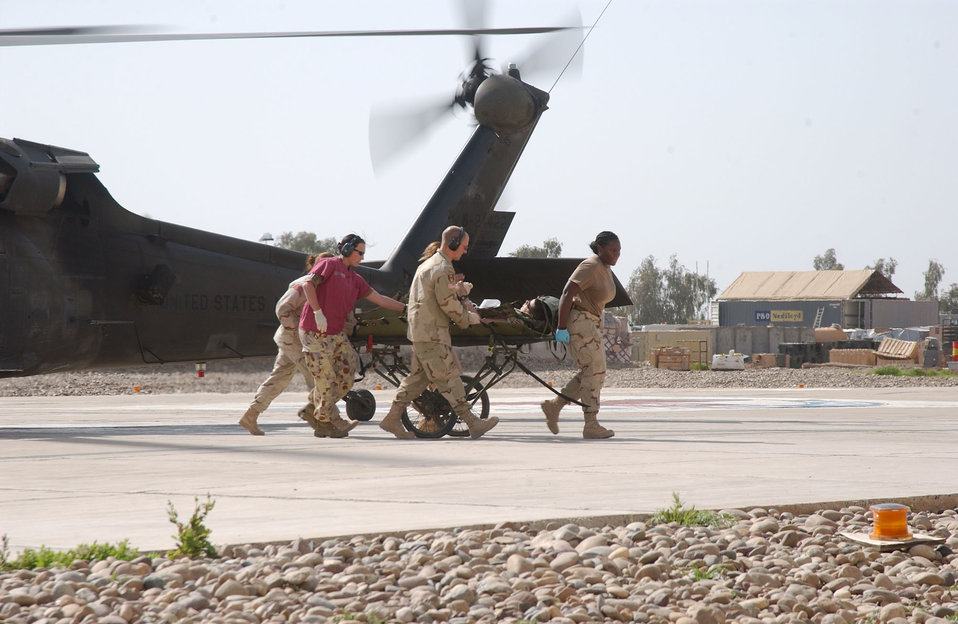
Balad medics perform critical mission

BALAD AIR BASE, Iraq -- A medical evacuation team moves a wounded Soldier to the emergency room at the Air Force theater hospital here. Airmen of the 332nd Expeditionary Medical Group run the hospital that serves as a primary care clinic and a contingency aero medical staging facility used to provide medical services for U.S. and coalition forces.